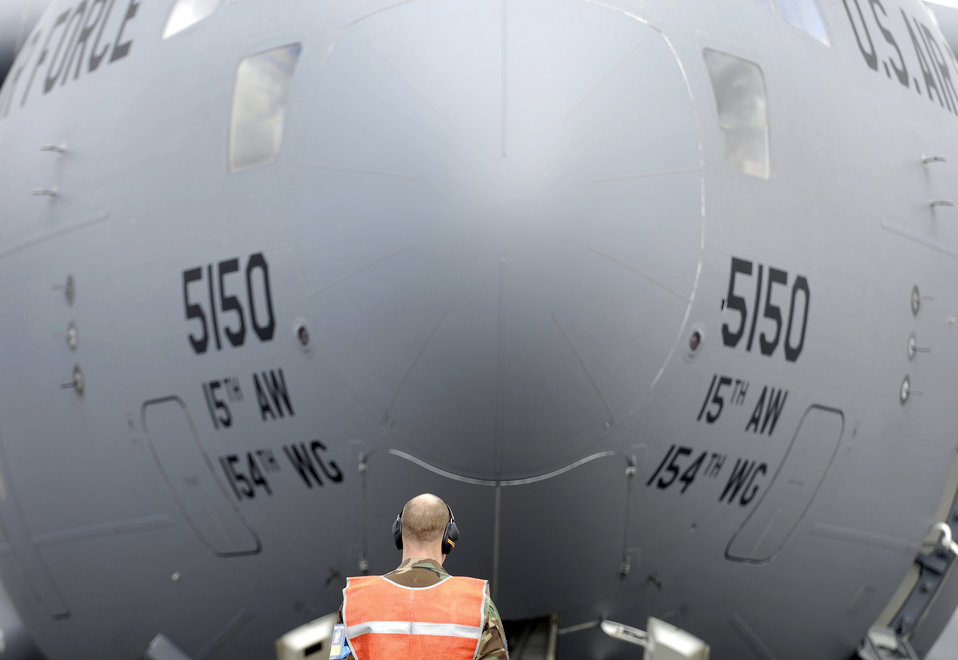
Hickam C-17 crews prep for Rodeo

Tech. Sgt. Brad Sufka waits to launch a C-17 Globemaster III from Hickam Air Force Base, Hawaii, on June 28. Sergeant Sufka is a crew chief from the 15th Aircraft Maintenance Squadron and is part of Hickam's Rodeo team. The team is practicing for the upcoming Air Mobility Command Rodeo at McChord AFB, Wash.